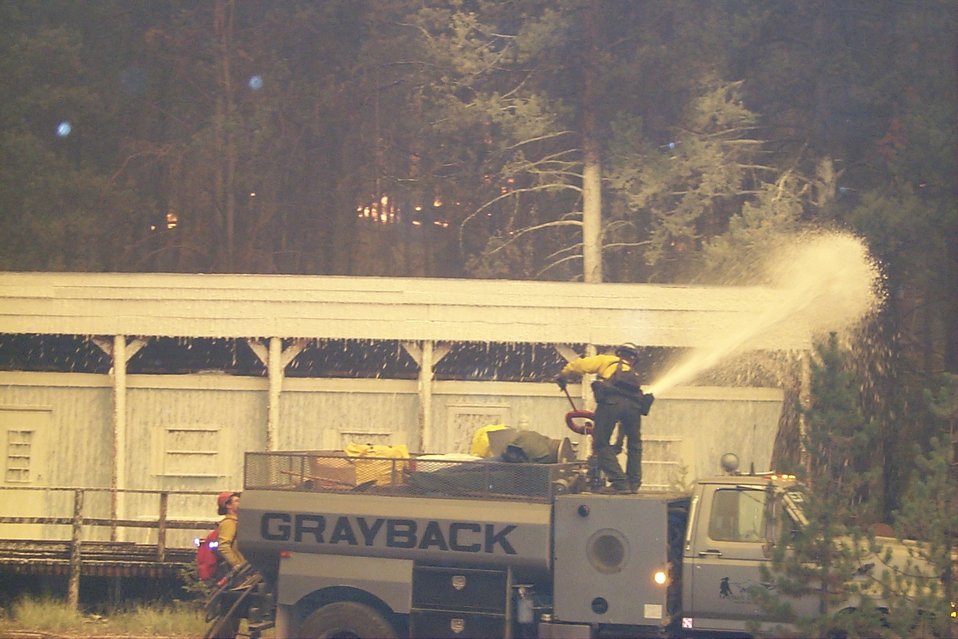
Fire retardant measures Urban interface Fire Clearwater Fire Salmon Field Office USRD Upper Snake River District